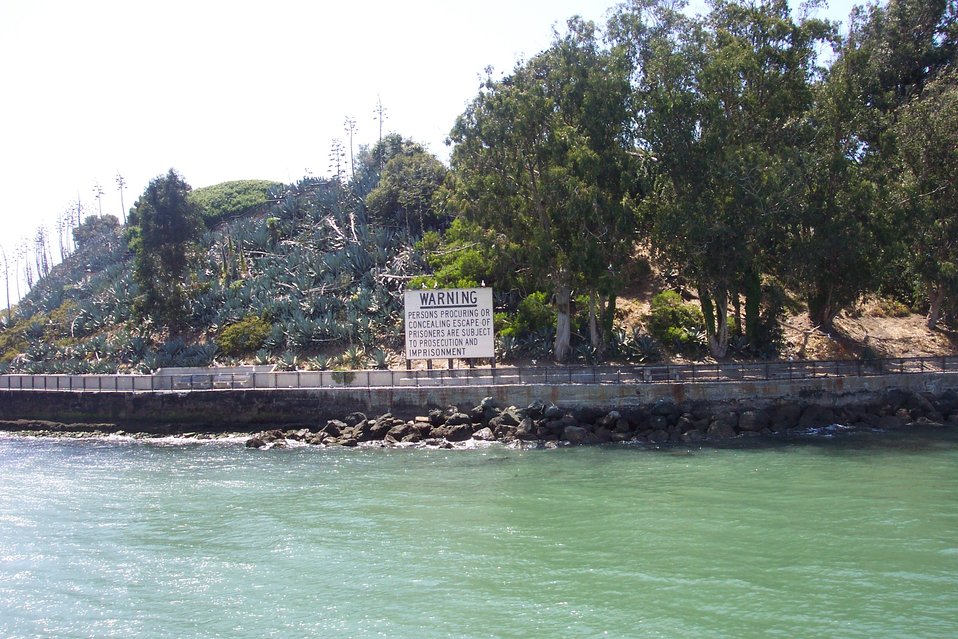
Warning sign at Alcatraz.